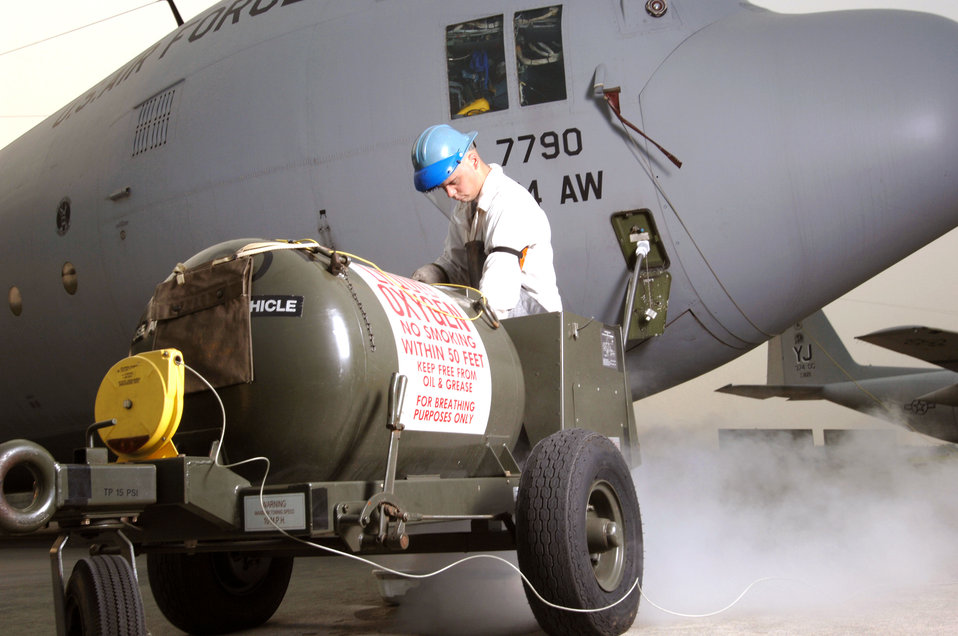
Breathe a little easier

YOKOTA AIR BASE, Japan -- Senior Airman Travis Hutts uses a liquid oxygen cart to service a C-130 Hercules. Liquid oxygen is used by aircrews to help them breathe at high altitude. Airman Hutts is a crew chief with the 374th Maintenance Squadron here.